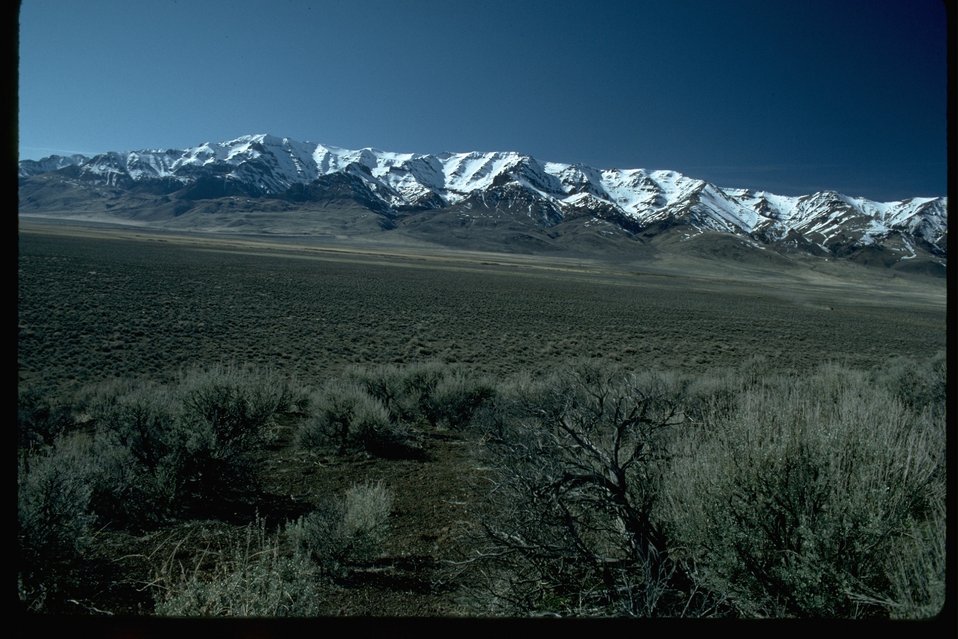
East face of Steens Mountain from Mickey Basin Road.